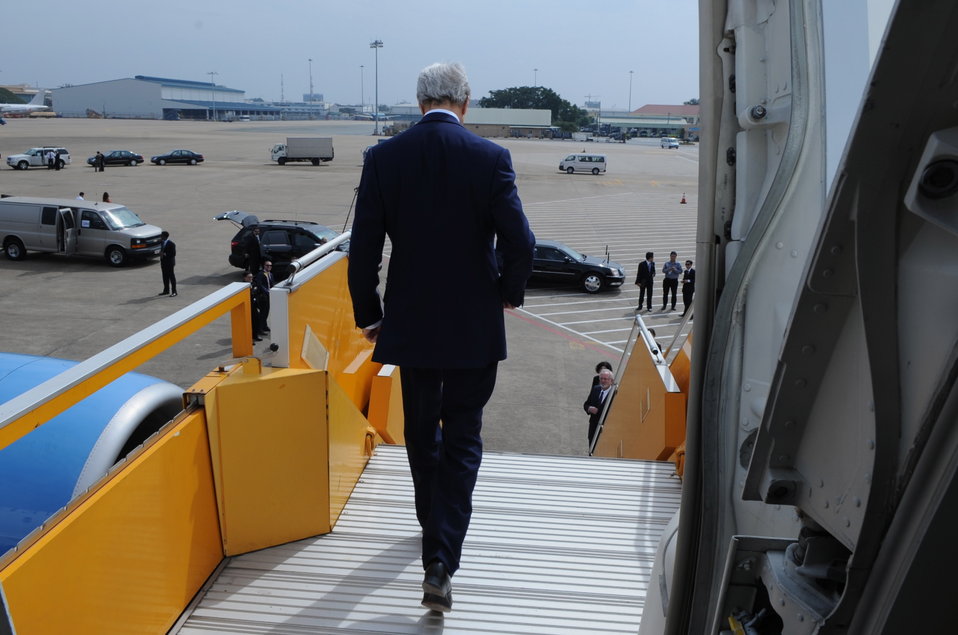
Secretary Kerry Arrives in Vietnam

U.S. Secretary of State John Kerry steps off his airplane, arriving in Ho Chi Minh City for his first visit to Vietnam as Secretary on December 14, 2013.